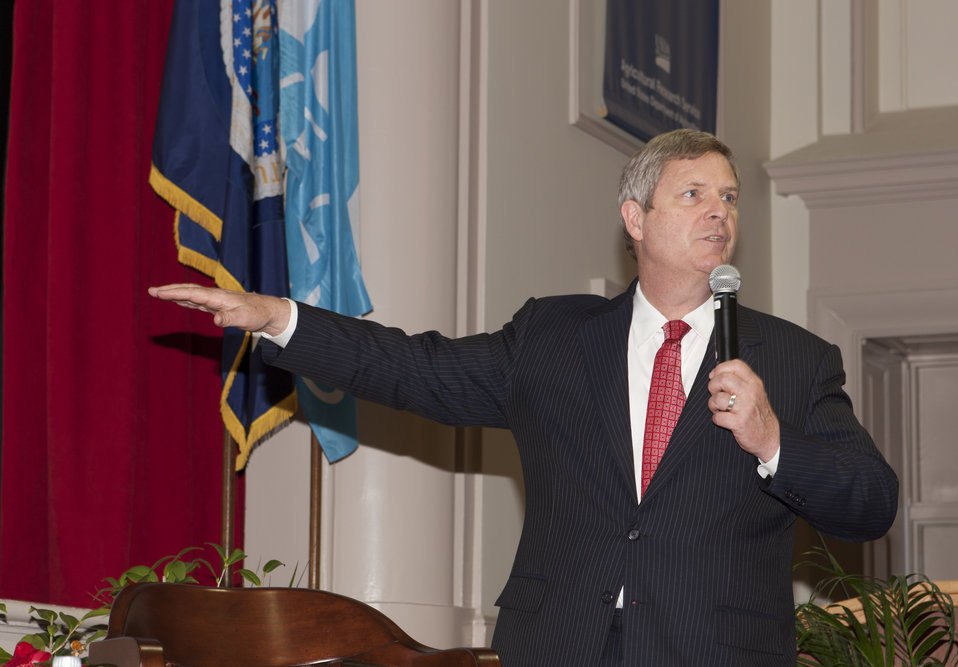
Agriculture Secretary Tom Vilsack speaks at the U.S. Department of Agriculture (USDA) Employees Ask the Secretary Session held at the USDA Carver Center in Beltsville, MD on Wednesday, March 21, 2012.